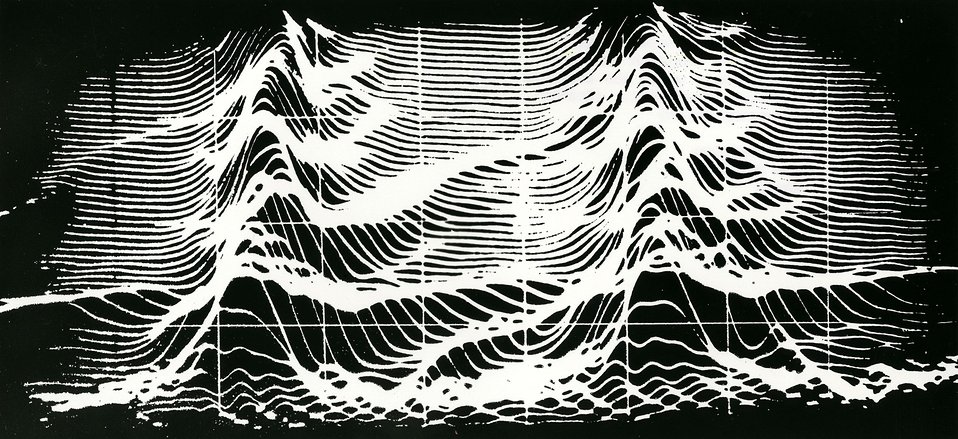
These twin 'Christmas Trees' were formed by an instrument which records the proton beam of Argonne's ZGS.